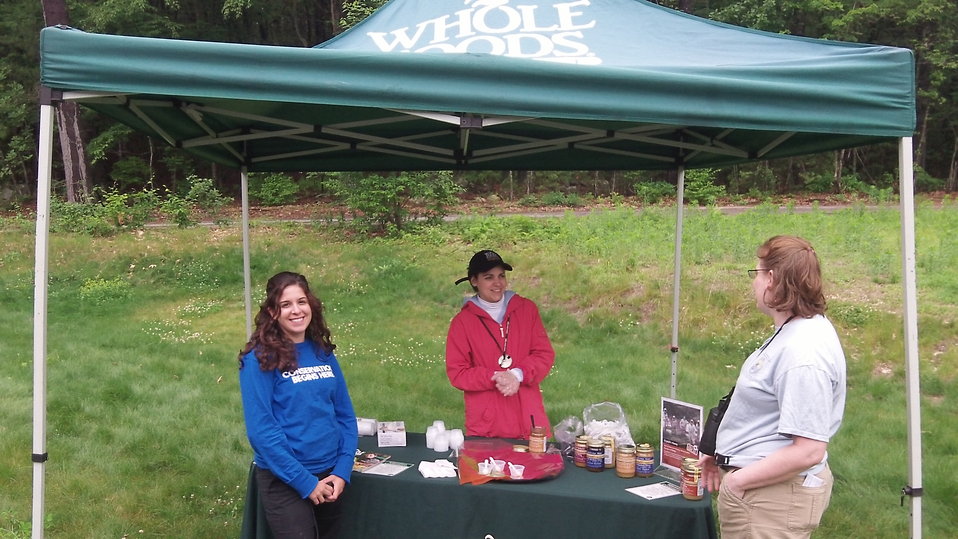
Assabet River National Wildlife Refuge Pollinator Festival

Whole Foods tent at the Assabet River National Wildlife Refuge Pollinator Festival, Sudbury, MA.